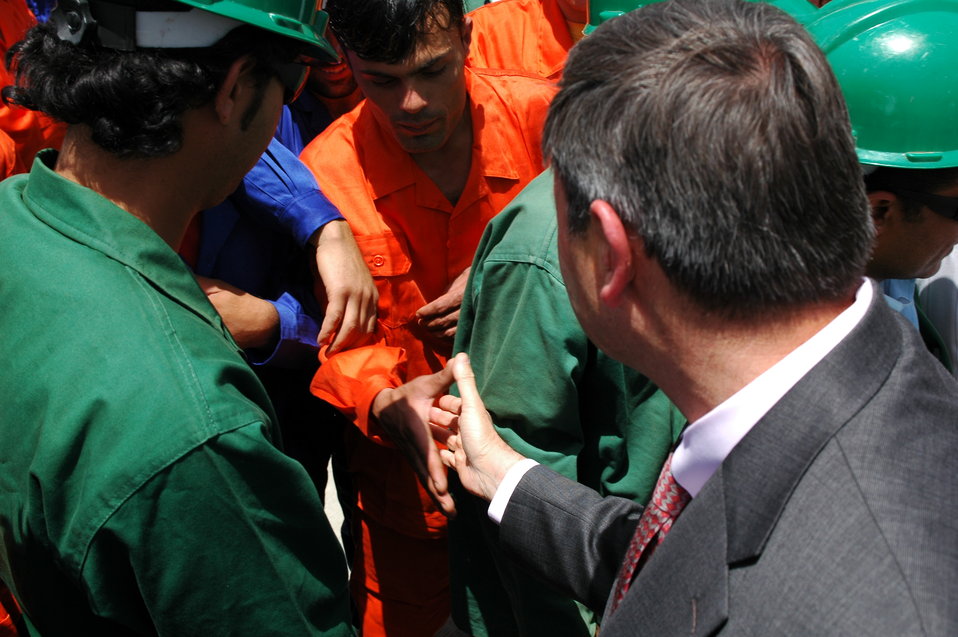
105 MW Tarakhil Power Plant Handover